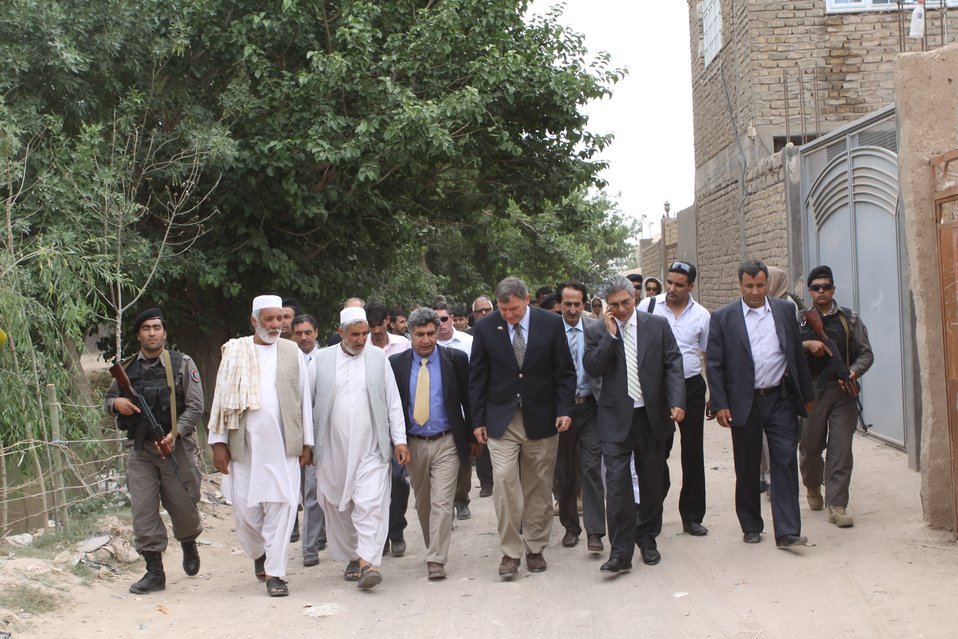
100525 Hirat Marble Conference 675